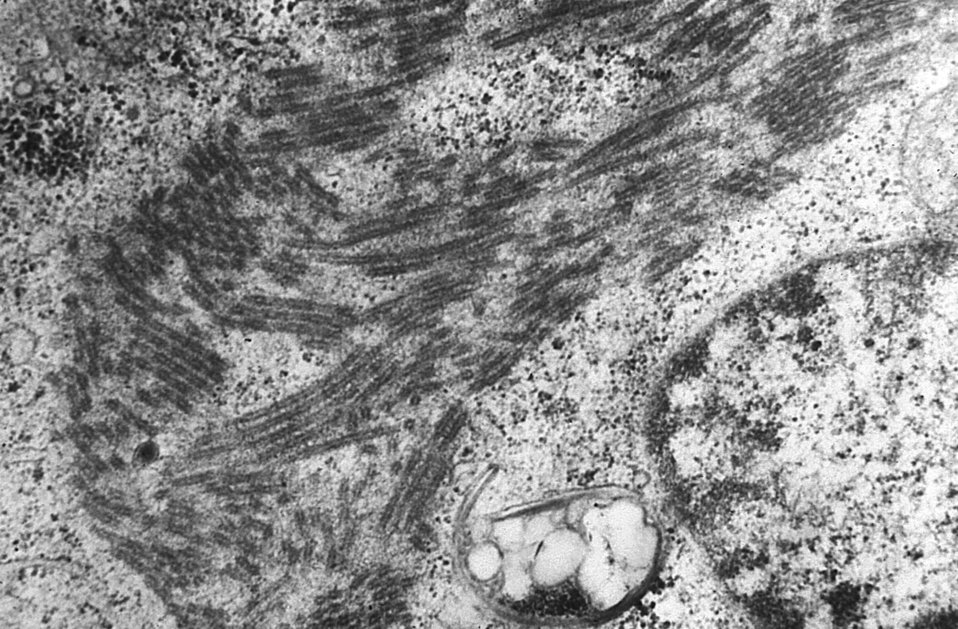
This electron micrograph depicts a Vero cell that had been infected with the Ebola virus, the causative agent for African hemorrhagic fever.